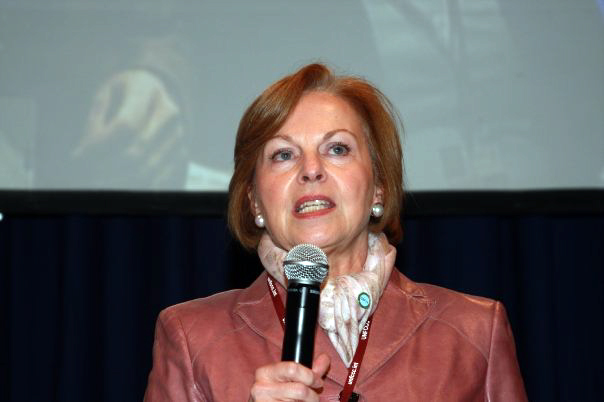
U.S. Ambassador to Denmark Laurie Fulton at the U.S. Center at COP15, Bella Center, Copenhagen, Denmark on December 11, 2009.